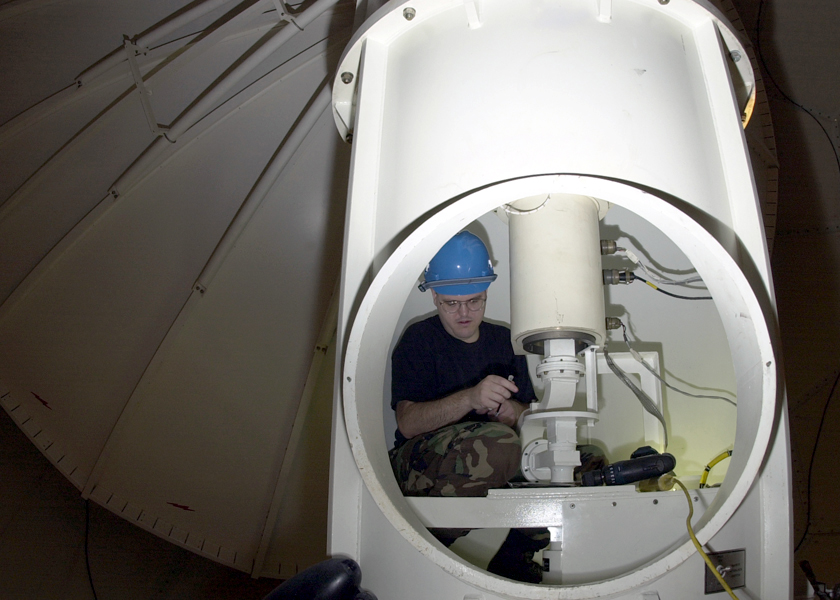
Cleaning the radar

ANDERSEN AIR FORCE BASE, Guam -- Tech. Sgt. Steven Goodlett cleans slip rings in a NEXRAD Doppler weather radar here during routine maintenance. Goodlett is assigned to the 36th Communications Squadron.